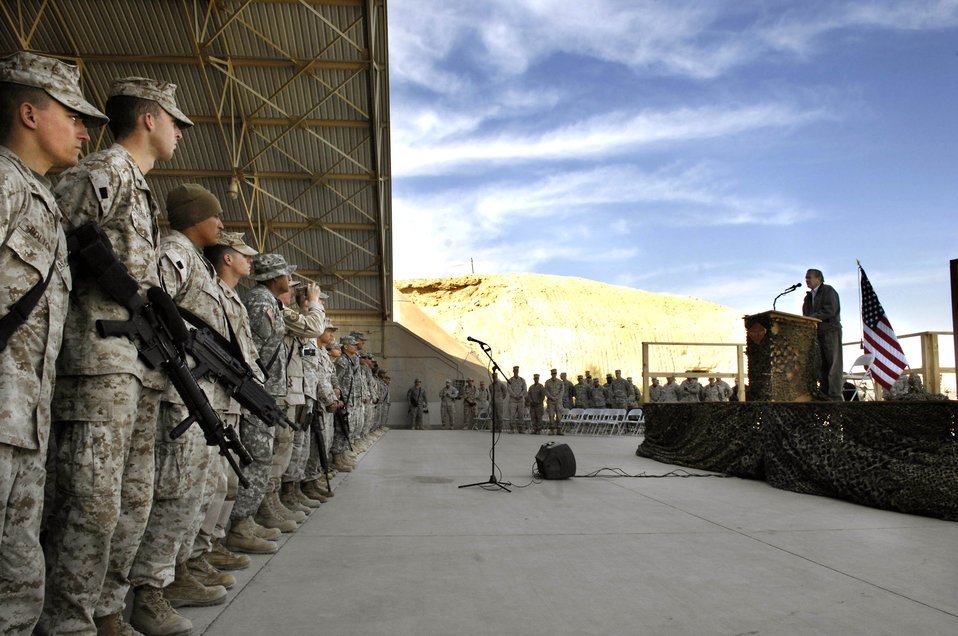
Iraqi Freedom

Secretary of Defense Donald H. Rumsfeld addresses servicemembers at a town hall meeting Dec. 9 on Al Asad Air Base, Iraq. Rumsfeld made a surprise visit to Iraq to thank the military and their families for their sacrifices and service to the country.